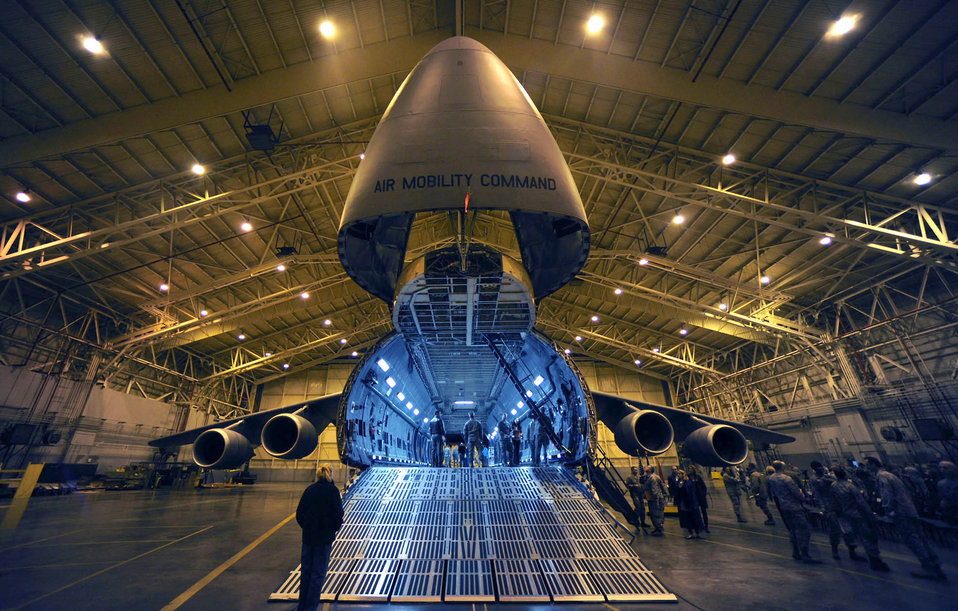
Open sesame

Airmen with New York Air National Guard's 105th Maintenance Squadron held a ceremony for a reconditioned C-5M Super Galaxy Nov. 5, 2010, at Stewart Air National Guard Base, N.Y.